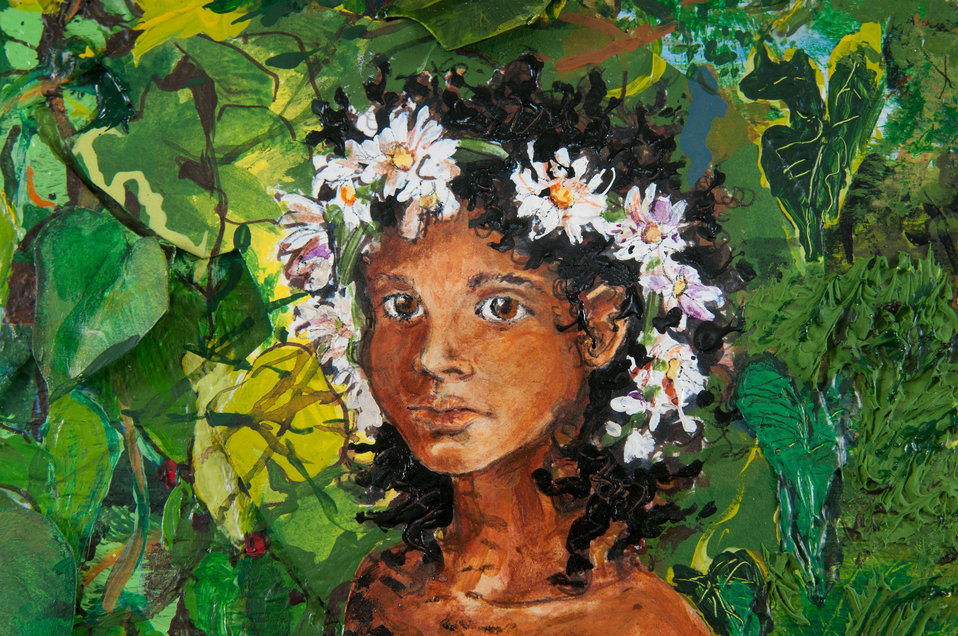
Online Viewer's Choice entries of the 2013 Art & Agriculture, Tuesday, July 9, 2013, in the South Building, Washington, D.C. Themes were expressed by employees from across the department and the contest was open to full-time and part-time USDA employees. Winning artwork will be displayed till the end of the year. U.S. Artistic expression is a creative outlet that is vital for an individual to grow and develop.